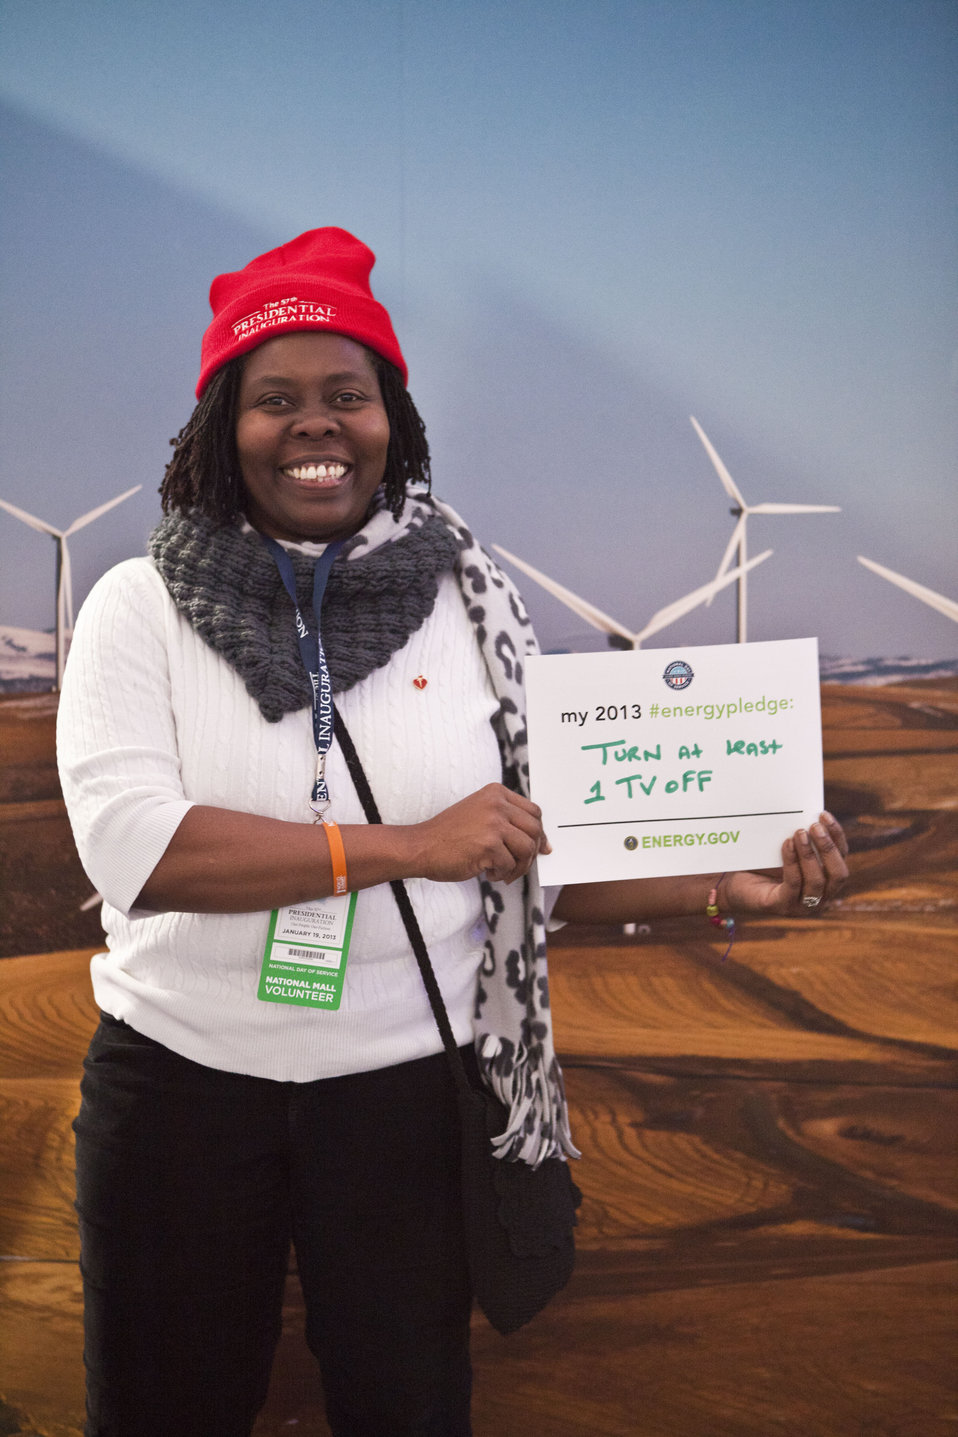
What's your #energypledge?